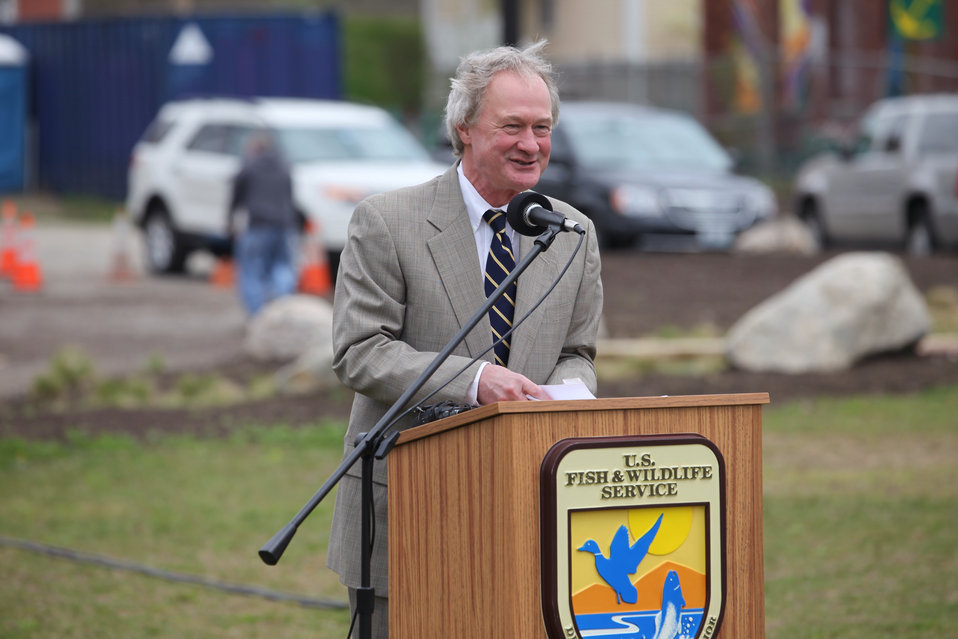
Governor Lincoln Chaffee

Rhode Island Governor Lincoln Chaffee speaking at the event.